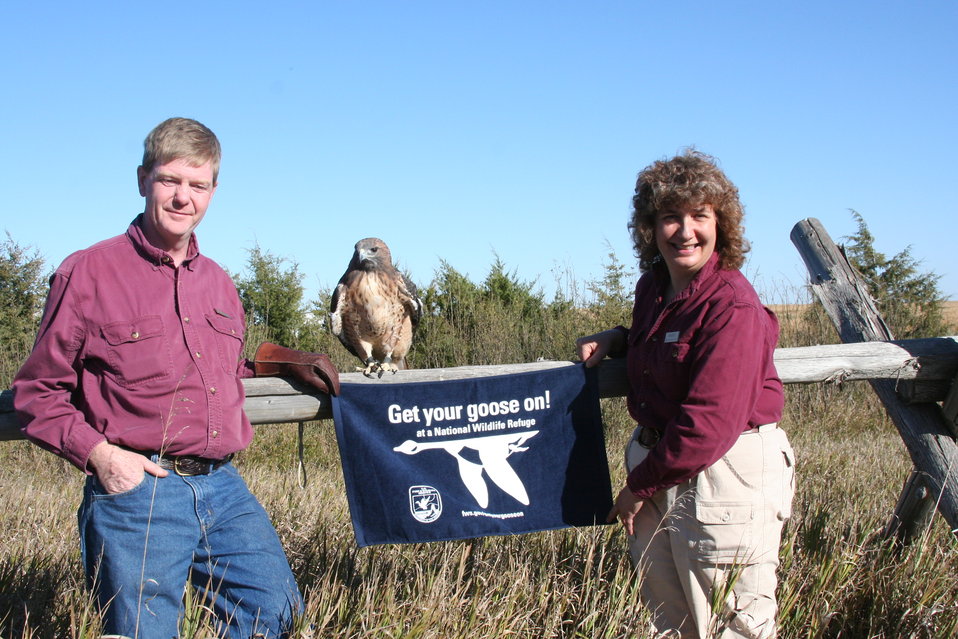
Get Your Goose On! - Raptor Style!

During Huron Wetland Management District's 2012 Prairie Festival, visitors were treated to an up close and personal look at various birds of prey.